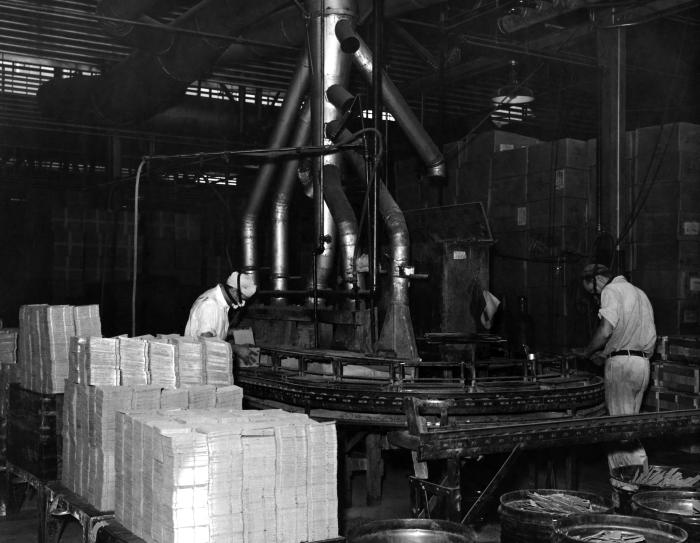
Published in the 'Public Health Bulletin', No. 262, 1941, this historic image, which was provided by the Center for Disease Control's (CDC), National Institute for Occupational Safety and Health (NIOSH), depicted a battery factory in which respirator-wearing workers were in the process of cleansing metal storage battery frames. As a device containing both lead, a toxic heavy metal, and acid, in the form of sulfuric acid, batteries are potentially dangerous, both in their finished state, as well as during their manufacture. Precautions need be taken when building a battery, including the use of goggles, gloves, and filtered breathing devices. These workers were wearing the requisite filtered mask, but no goggles, which would have prevented accidental eye exposure to splashing fluids, and it could not be determined if they were wearing gloves.